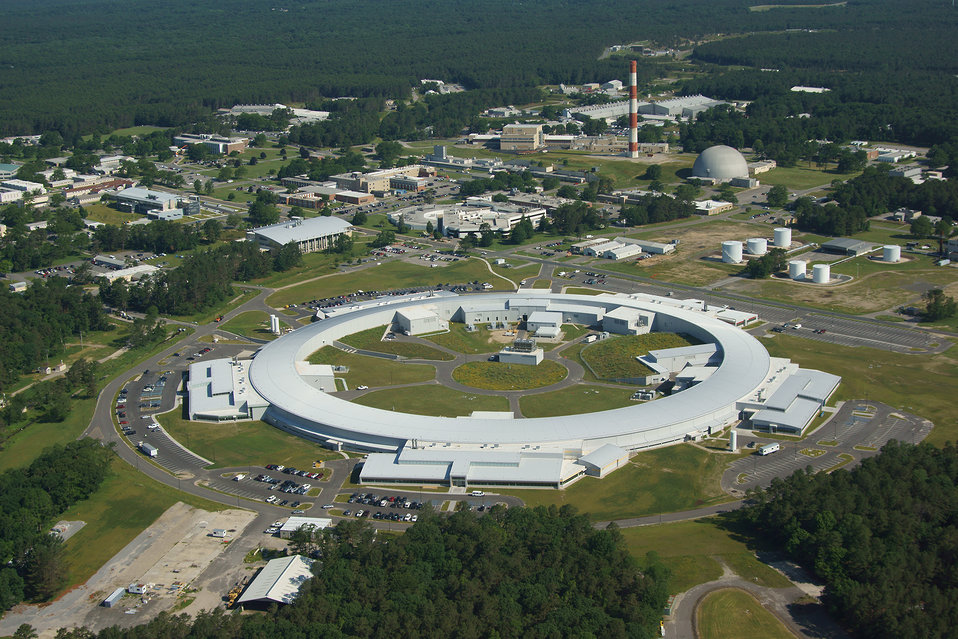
AERIAL VIEW OF BROOKHAVEN NATIONAL LABORATORY'S NATIONAL SYNCHROTRON LIGHT SOURCE II.

NSLS-II will be the world's leading storage-ring-based synchrotron light source when completed in 2015. It will allow the characterization of the atomic and electronic structure, chemical composition, and magnetic properties of materials in a wide range of temperatures and environments. The unique aspects will help researchers explore solutions to the grand energy challenges faced by the nation, and open up new regimes of scientific discovery.